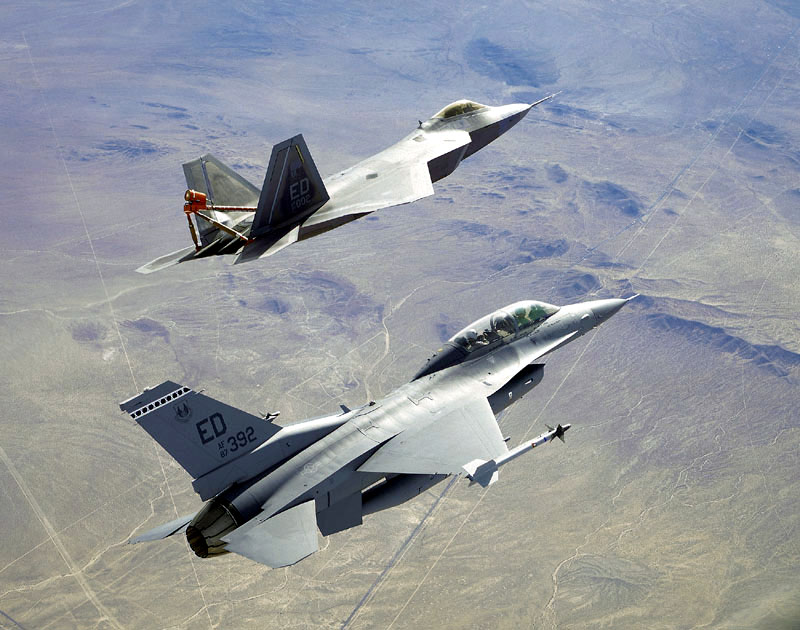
Me and my shadow

EDWARDS AIR FORCE BASE, Calif. -- An F/A-22 Raptor is shadowed by an F-16 Fighting Falcon chase plane. The F/A-22 combines stealth, supercruise, maneuverability and many other features enabling a first look, first shot, first kill capability that will provide continued air dominance for generations to come.